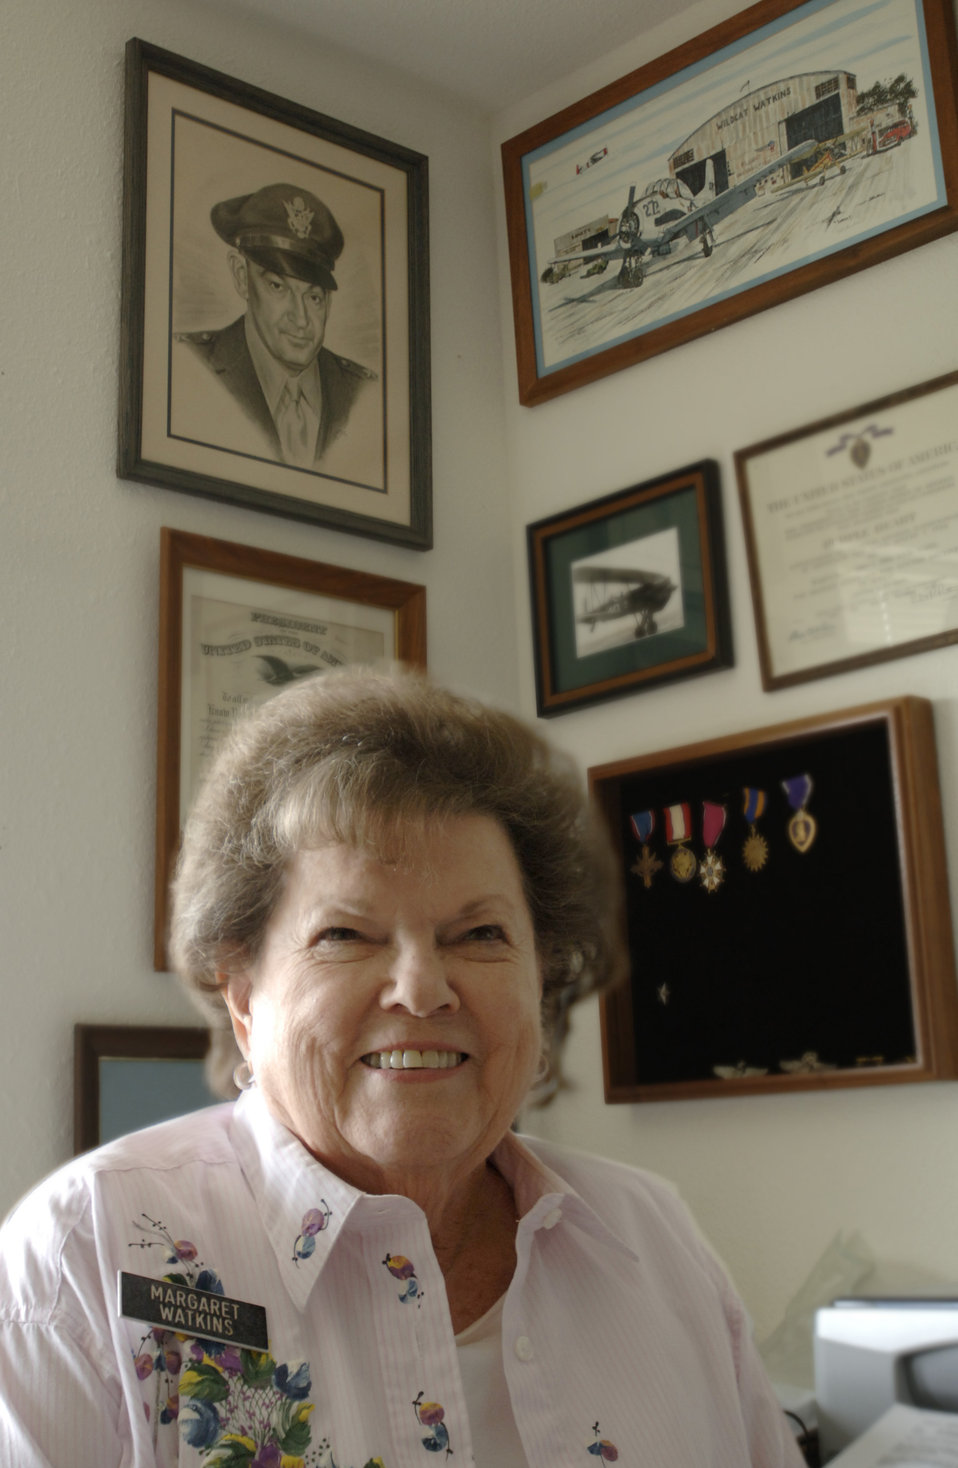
Memories of father stay strong, even after 63 years

Margaret Ramey Watkins sits beneath a portrait of her father, Brig. Gen. Howard K. Ramey, at her home in San Antonio. General Ramey was a founding member of the Order of Daedalians, a fraternal order of military pilots.